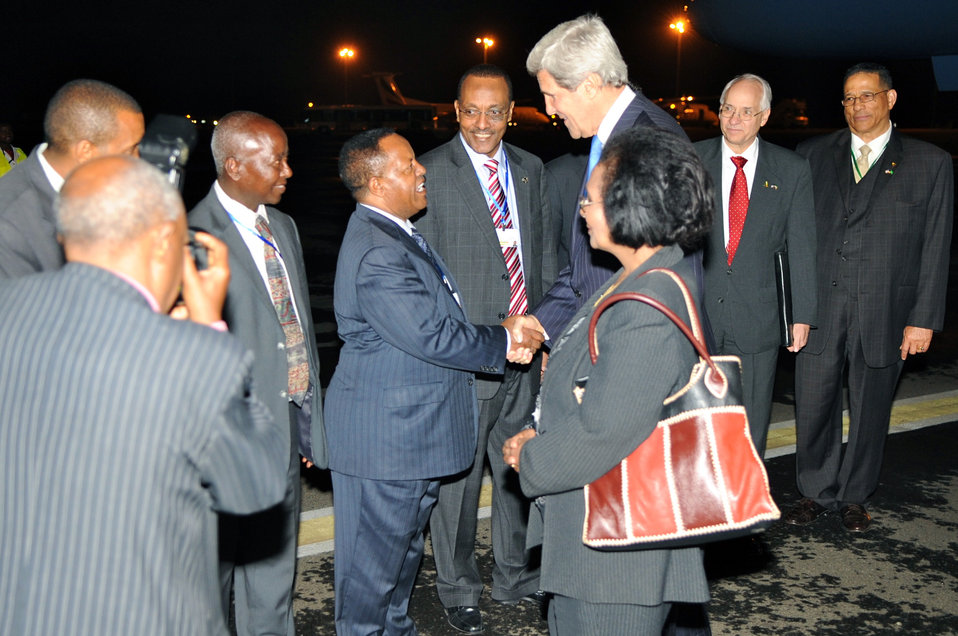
Secretary Kerry Is Greeted By Ethiopian Officials

U.S. Secretary of State John Kerry is greeted by Ethiopian officials after landing in Addis Ababa, Ethiopia, on May 24, 2013, for the Africa Union 50th anniversary meeting.